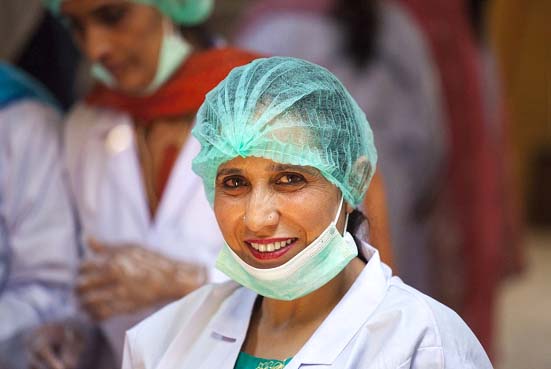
USAID's Agribusiness Project Women FEG for Food Processing - Pickle Production at Village Jabbi

Some already have part-time jobs out-side of the home, such as teaching at community schools. Some of their husbands work as laborers or security guards.
www.usaid.gov/pk/db/sectors/growth/project 750.html